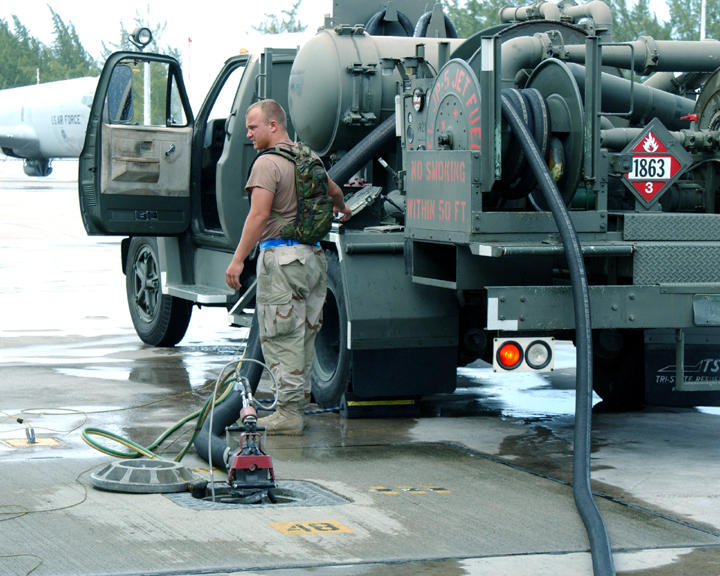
Fuels Airmen

OPERATION ENDURING FREEDOM -- Senior Airman Michael Mizer refuels a KC-135 Stratotanker. The fuels element Airmen here have issued more than 10 million gallons of aviation fuel. Airman Mizer is a refueling unit operator with the 40th Expeditionary Logistics Readiness Flight fuels element. He is deployed from Fairchild Air Force Base, Wash.